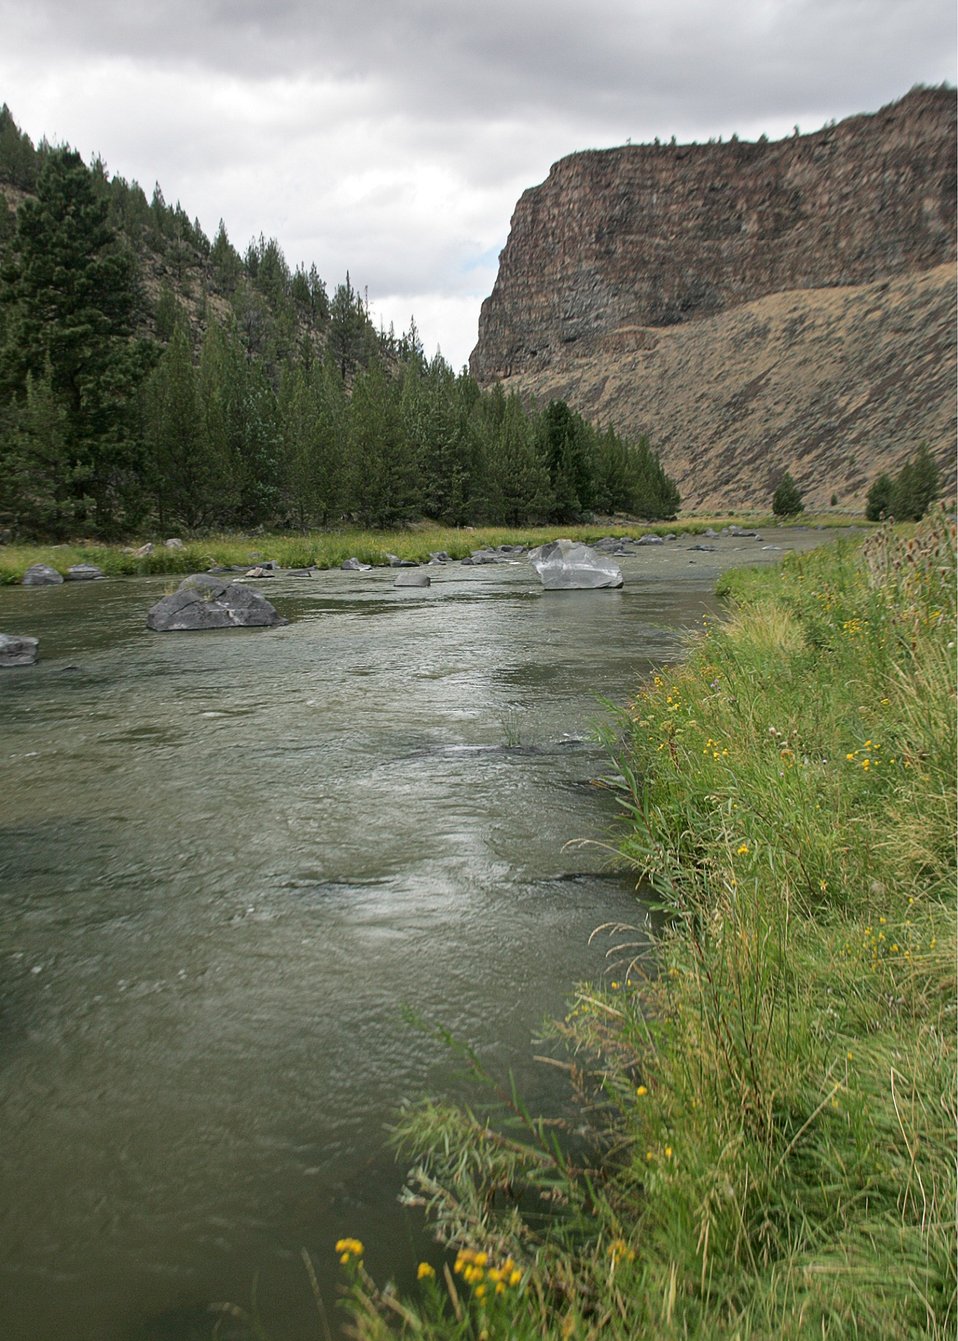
Lower Crooked River Backcountry Byway.